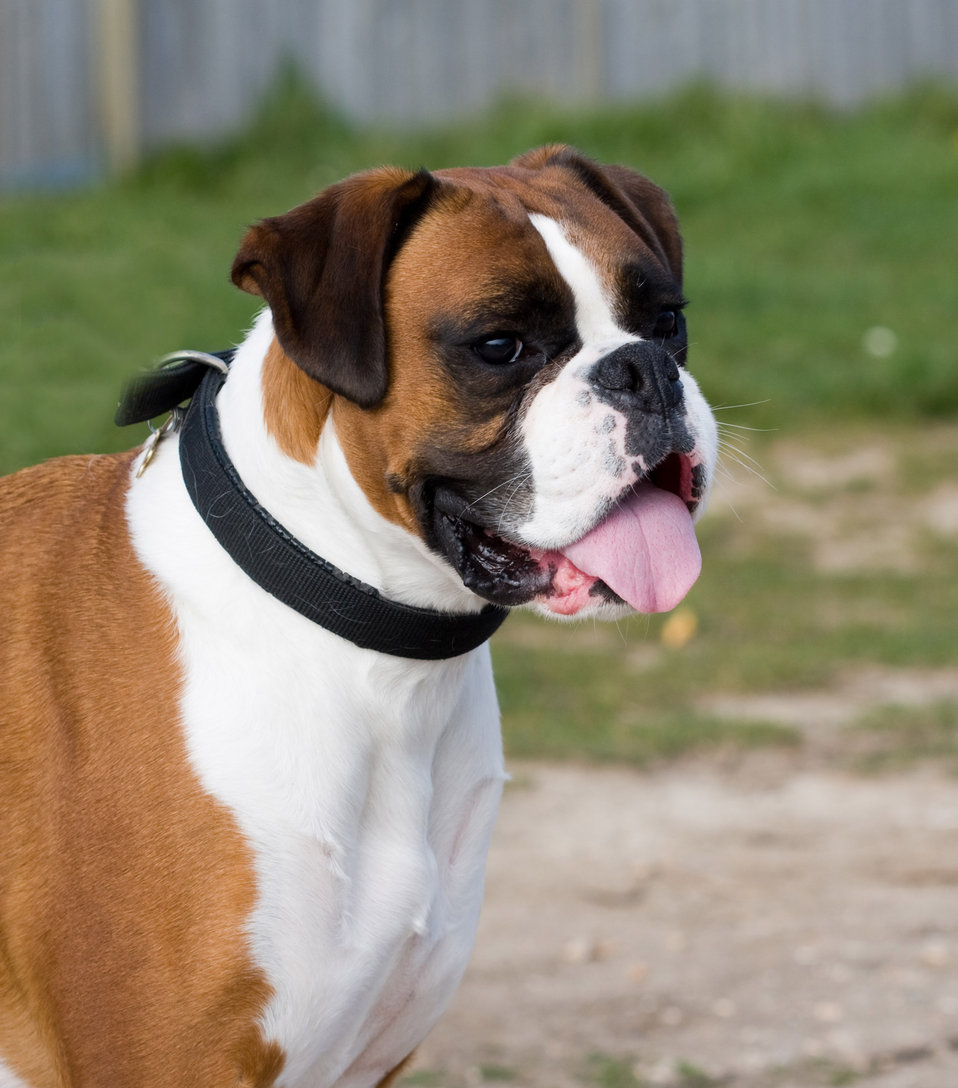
Boxer dog

Beautiful close-up portrait of a boxer dog.